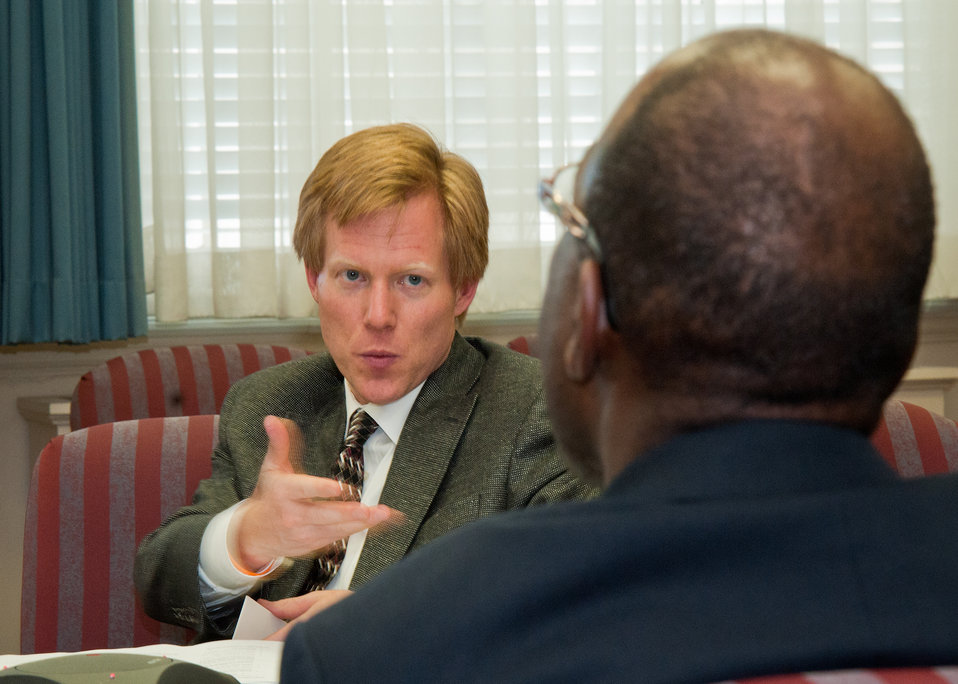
Max Finberg, Director, Center for Faith Based and Neighborhood Partnerships, hosted a Summer Food Service Program Webinar Watch Party with members of the Church of God in Christ at the United States Department of Agriculture, on Friday, May 13, 2011. The webinar was held to demonstrate the process for developing a summer food program for civic institutions. The Summer Food Service Program created by the Food and Nutrition Service to ensure that children in low-income areas could continue to receive nutritious meals during long school vacations, when they do not have access to school lunch or breakfast.